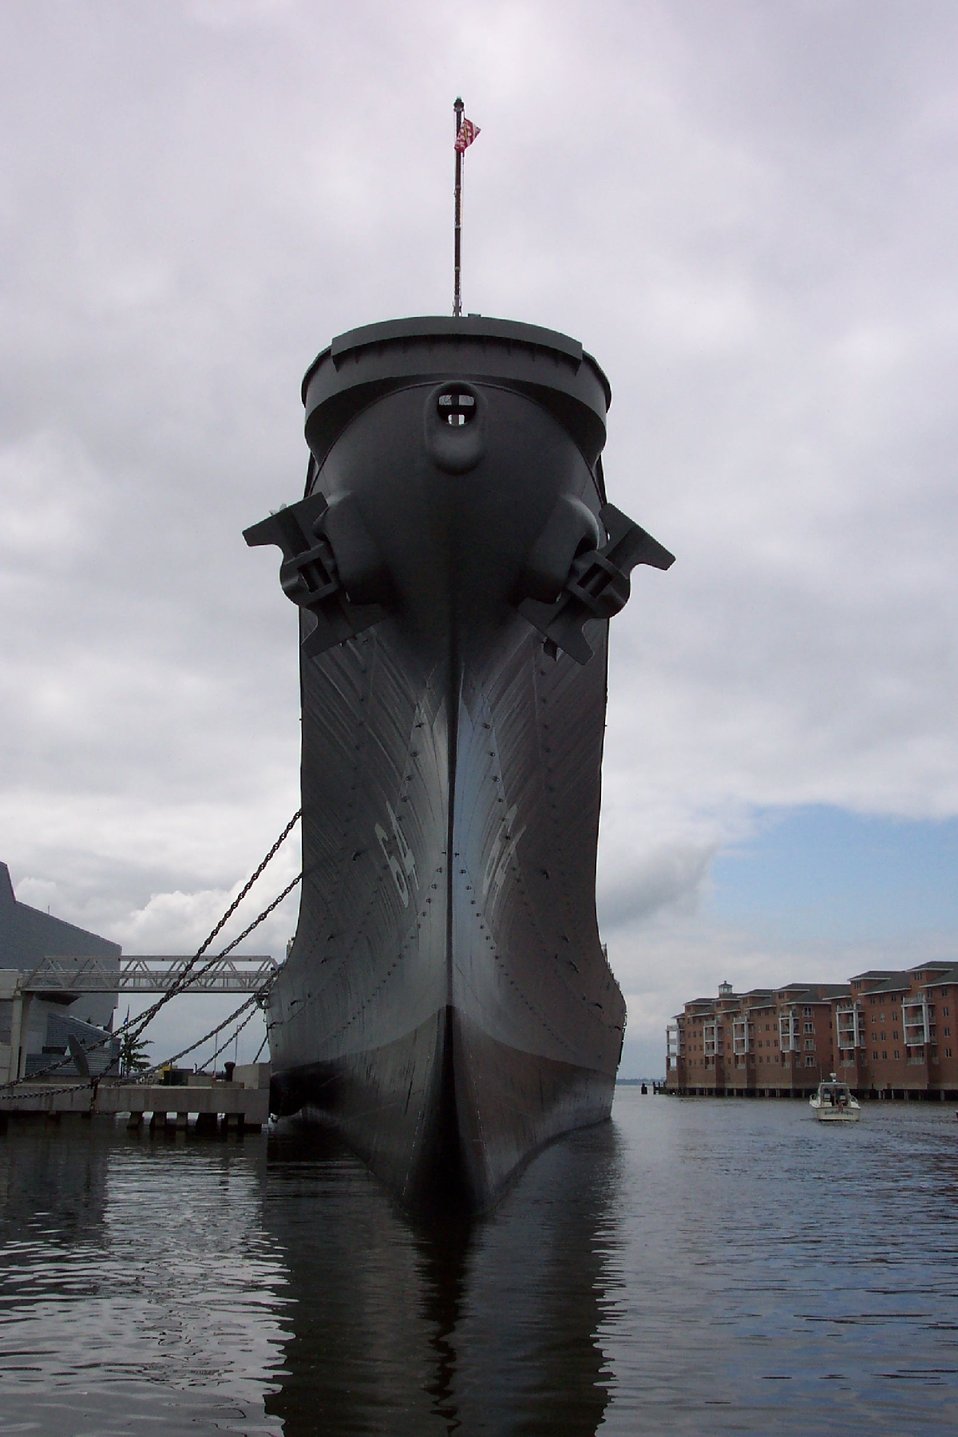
The Battleship Wisconsin at Nauticus National Maritime Center.